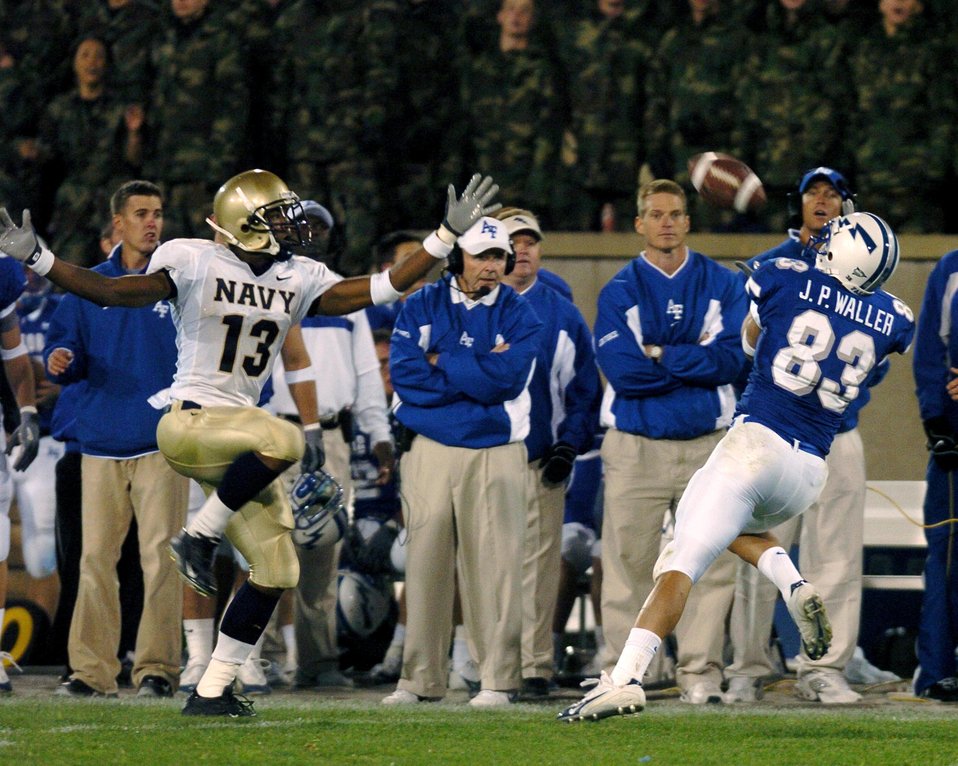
Navy boots AF out of trophy bid

U.S. AIR FORCE ACADEMY, Colo. -- Air Force wide receiver J.P. Waller beats a Navy defensive back on a long pass, but it was not enough to win the game here Sept. 30. Navy beat Air Force 24-21. Waller had more than 100 yards receiving on the night.